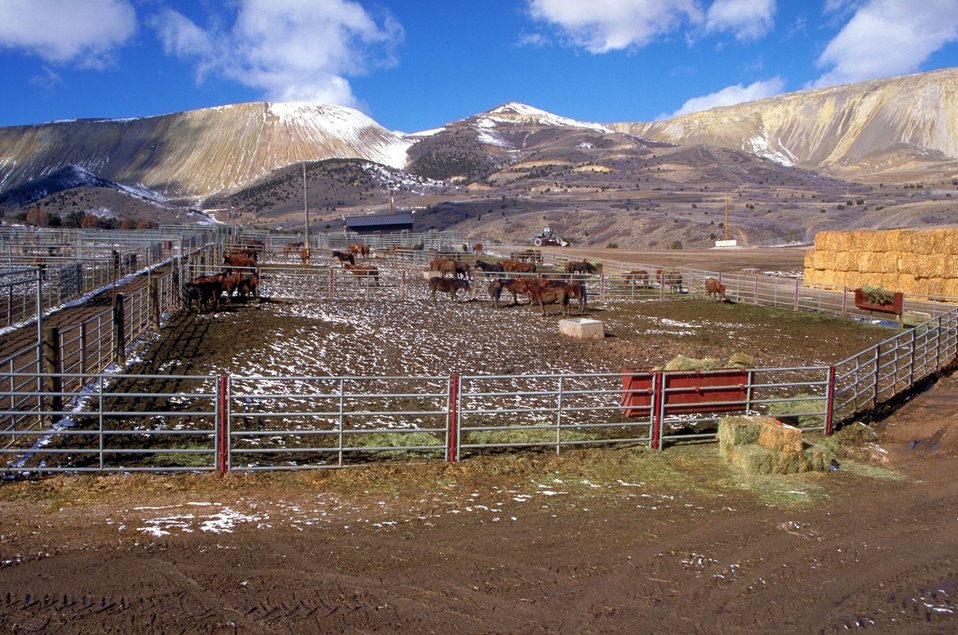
Salt Lake Regional Wild Horse and Burro Center Butterfield Canyon.